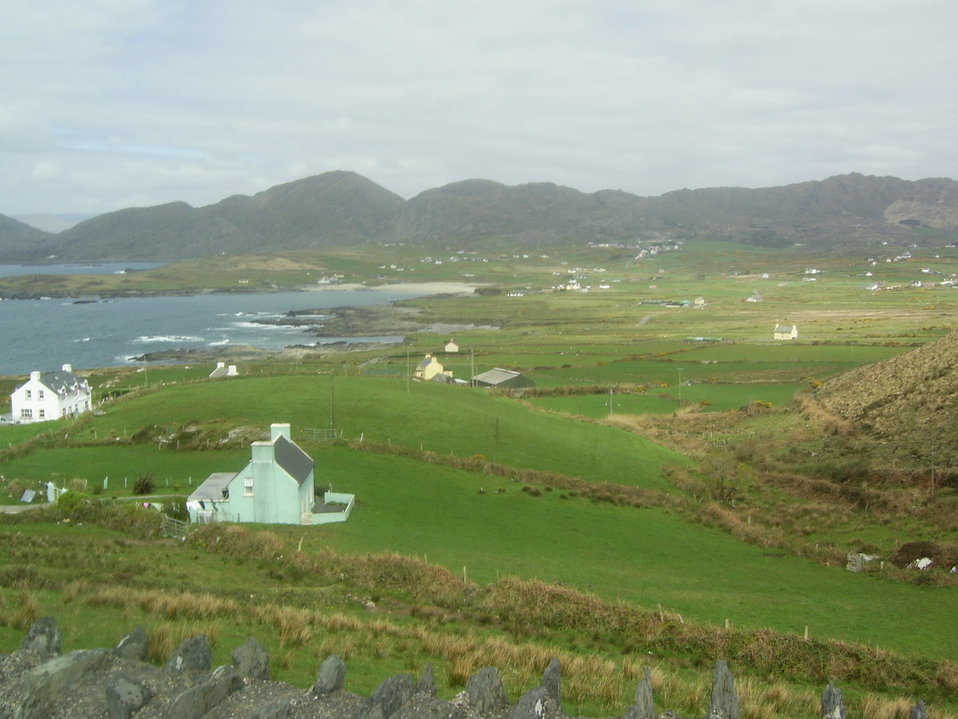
View of Allihies.
Allihies